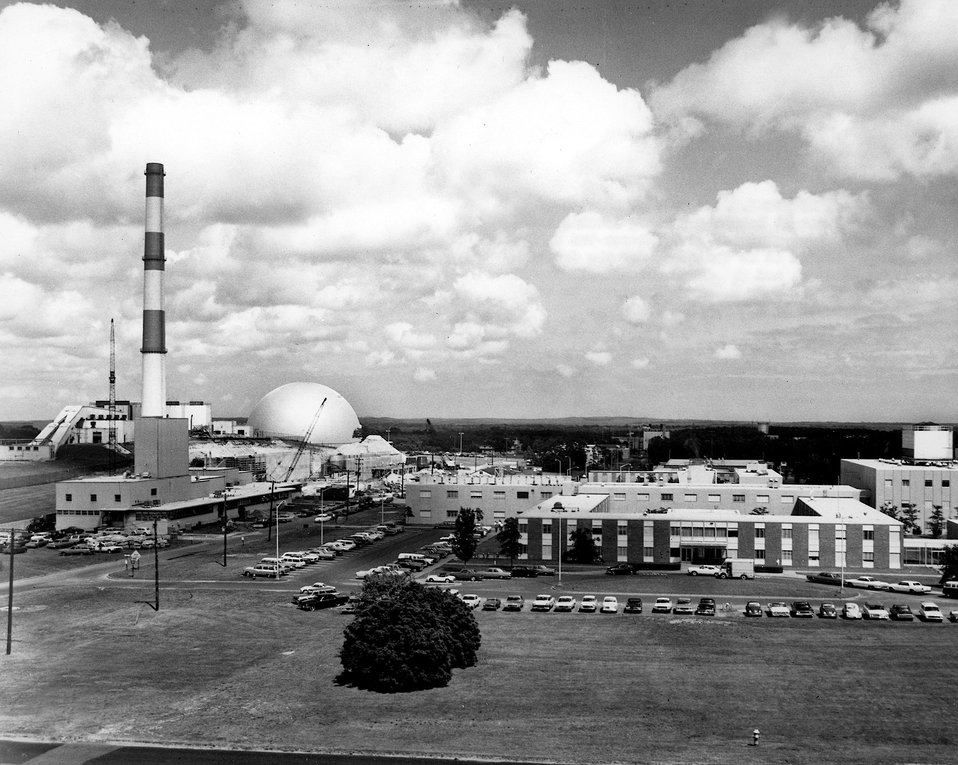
View of a portion of the Brookhaven National Laboratory site, looking east.